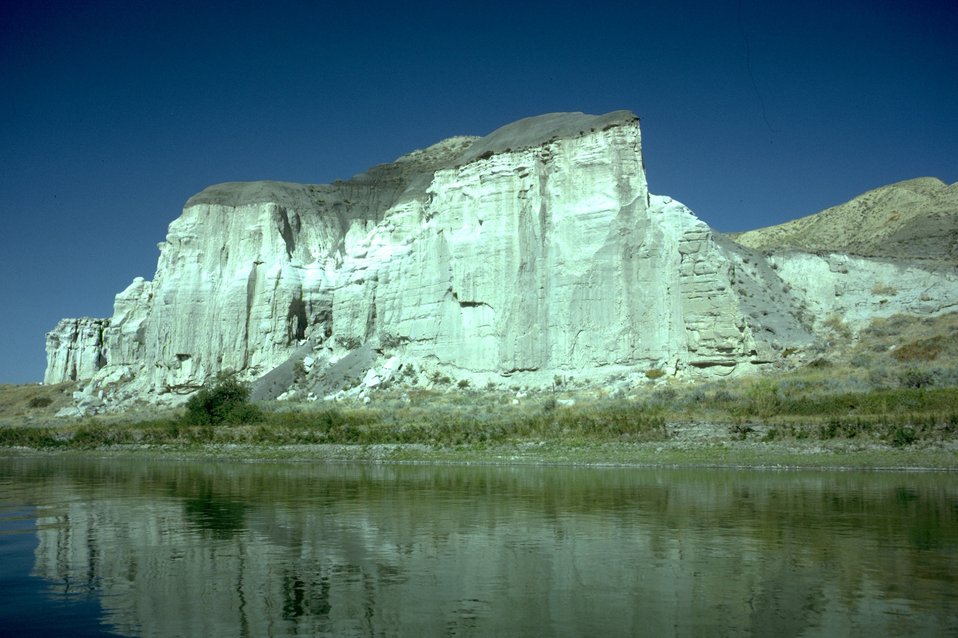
Missouri River